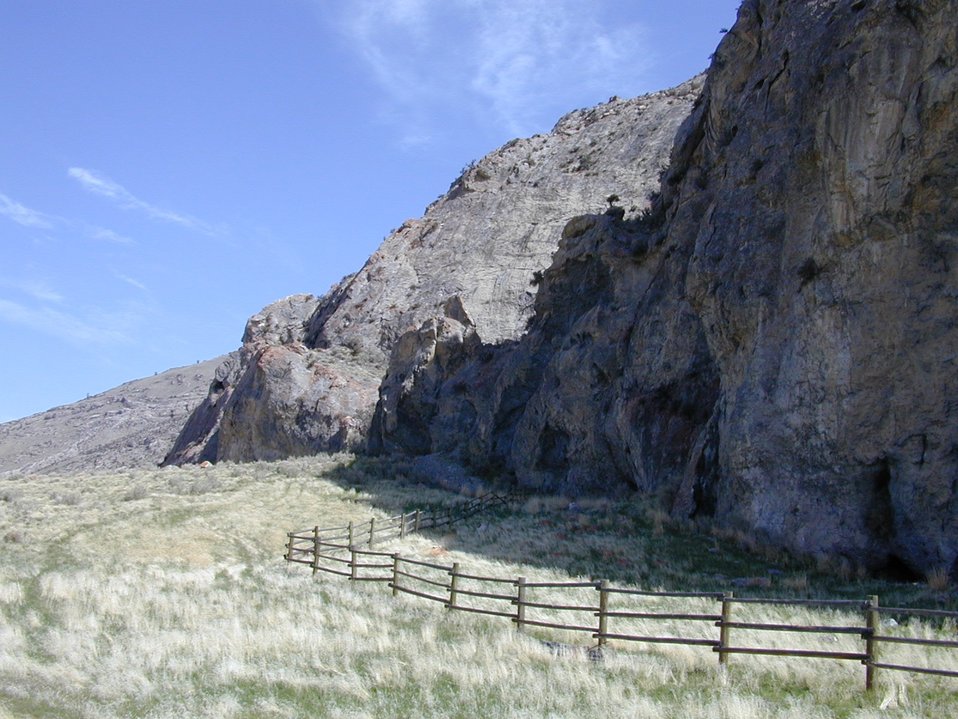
Birch Creek Valley Idaho Falls Field Office USRD Upper Snake River District